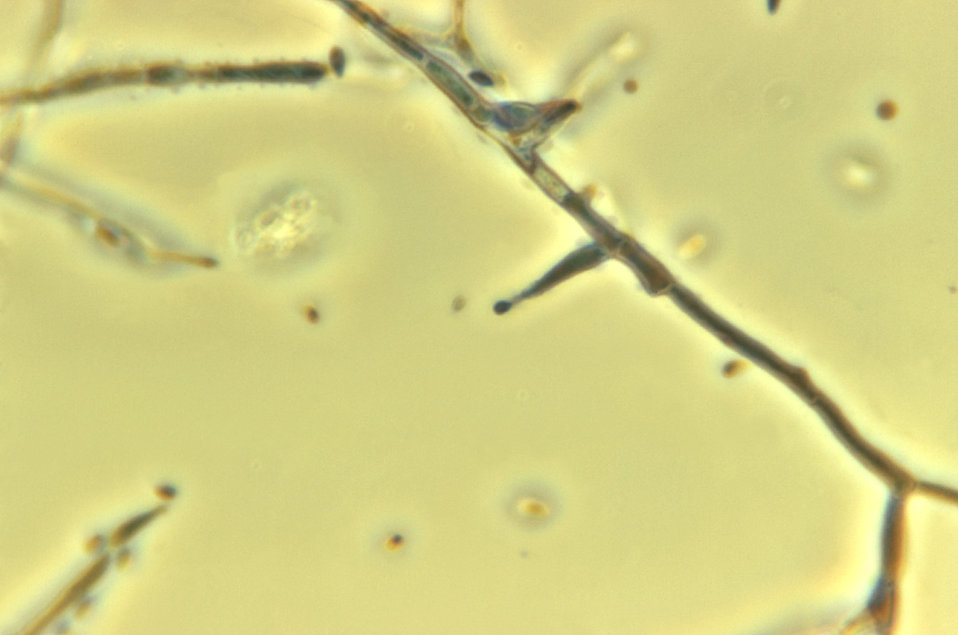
Magnified 1125X, this photomicrograph revealed morphologic details displayed by the fungal organism, Phialophora parasitica. A darkly-pigmented, filamentous fungus, which is known to be a cause of chromoblastomycosis and phaeohyphomycosis which affect the subcutaneous tissues, however, in the case of phaeohyphomycosis, many organ systems may be affected, even becoming disseminated throughout the body.